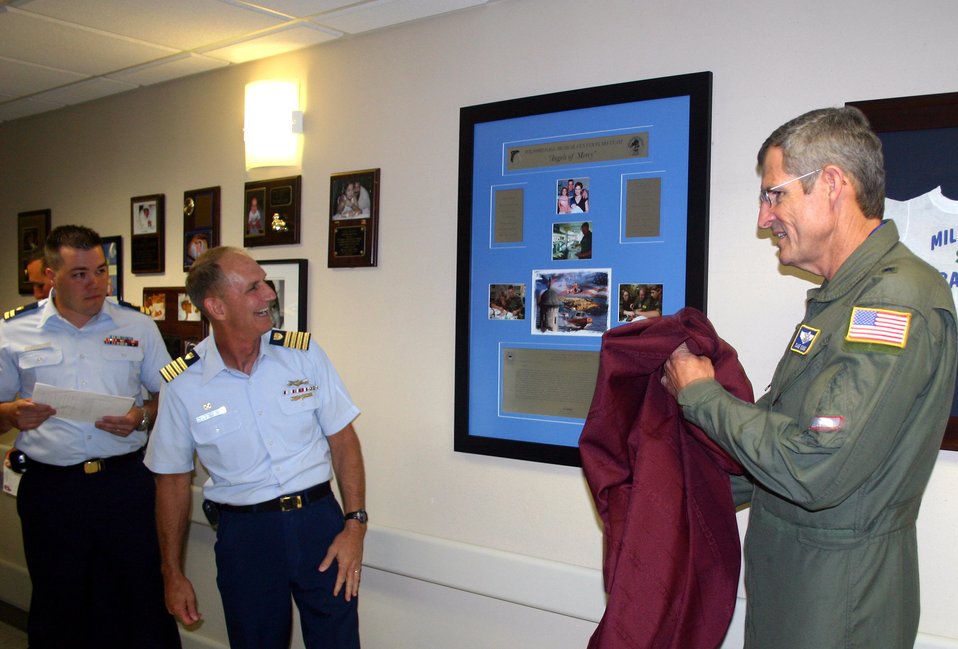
Coast Guard thanks Air Force ECMO team

A plaque thanking the 59th Medical Wing's Extracorporeal Membrane Oxygenation team is unveiled by Brig. Gen. (Dr.) David Young (right) and Coast Guard Capt. James Tunstall. Captain Tunstall and Coast Guard Lt. Seth Parker (left rear) traveled from San Juan, Puerto Rico, to Wilford Hall Medical Center at Lackland Air Force Base, Texas, to present the plaque and thank the ECMO team for saving the life of baby Stuart Parker, Lieutenant Parker's son. General Young is the 59th MDW commander. Captain Tunstall is the San Juan Sector 7 Coast Guard commander.